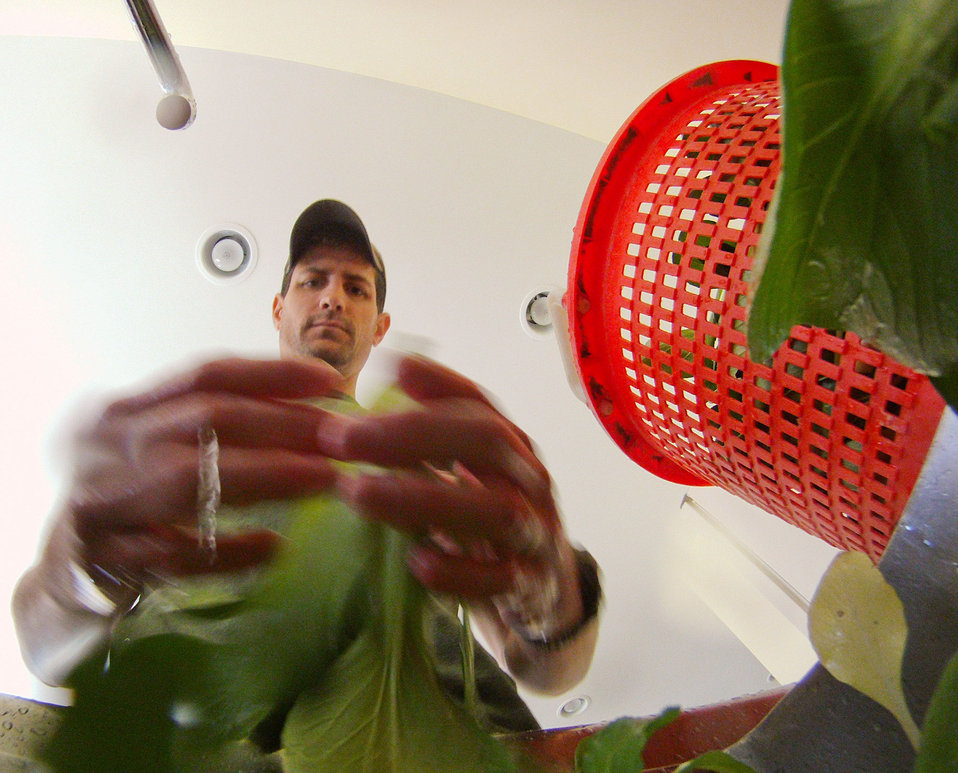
Reece Latron cleans and inspects every leaf harvested from Amy's Organic Garden on Thursday, May 5, 2011, in Charles City, VA, in preparation for a farmer's market tomorrow. Anything less than perfect will be composted. The farm also participates with Fall Line Farms a local food cooperative in the Richmond, VA, area that offers a wide variety of household food staples and specialty items on an ever changing inventory of fruits, vegetables, meats, soaps, eggs, cheeses, flowers, honey, pastas, sauces, syrups, baked goods, mushrooms, flour and grains. Suppliers post what they have on a Lulus Local Food online listing and customers can make their selection. Every Thursday suppliers deliver orders to, one of several pick-up points, designated by the customers in or around the Richmond area.